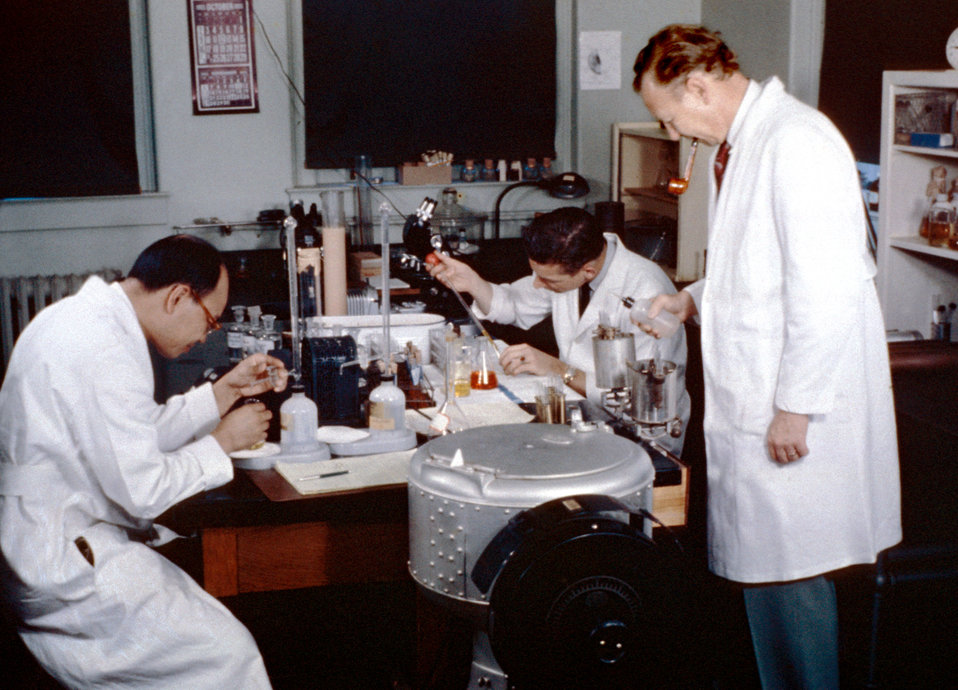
Here technologists are carrying out Plague Studies in San Francisco, 1961.